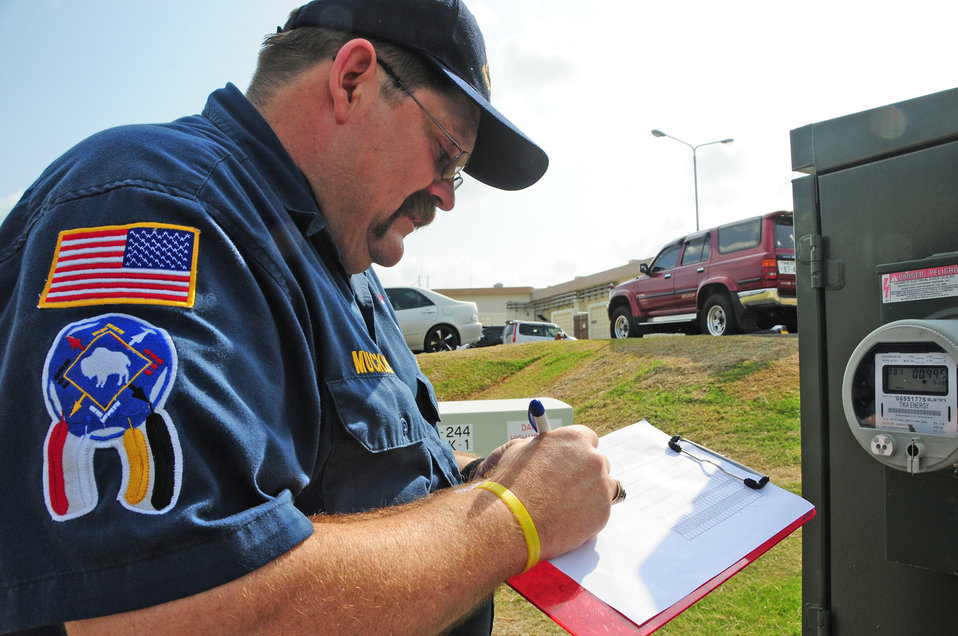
Energy Guy

John Muckey, a resource efficiency manager for the 718th Civil Engineer Squadron at Kadena Air Base, Japan, takes a reading from one of the electric meters on base. Mr. Muckey, known around the base as